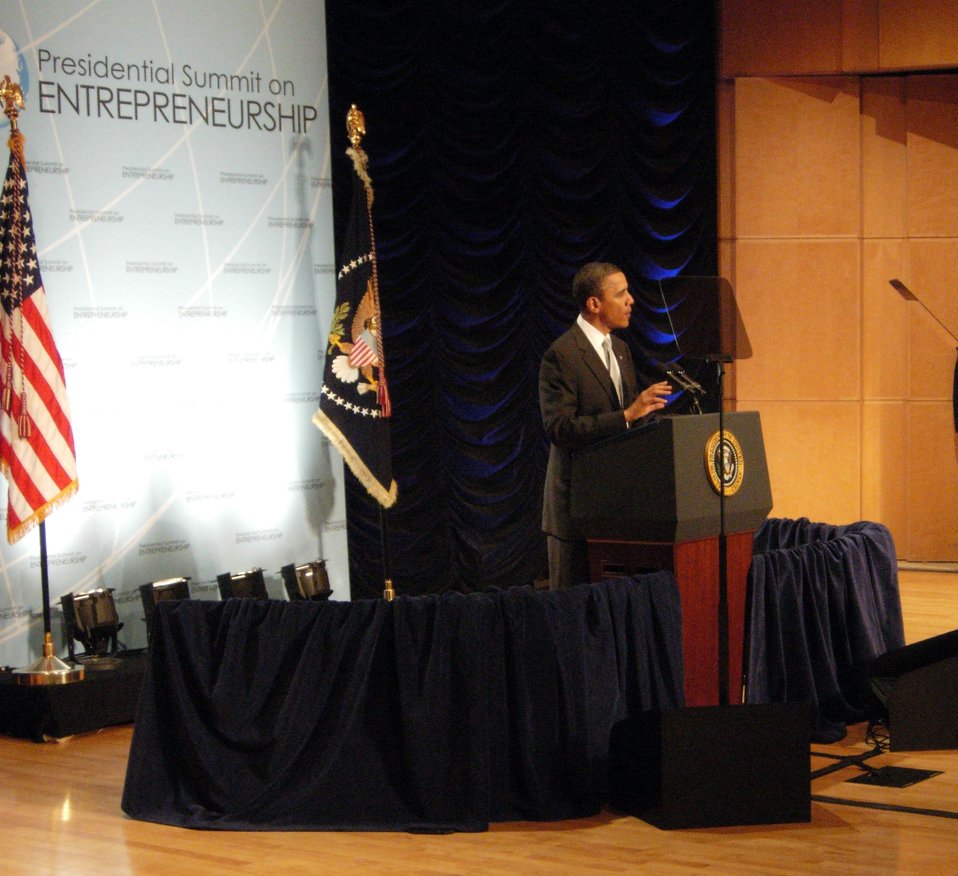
President Obama Delivers Remarks

U.S. President Barack Obama delivers remarks at the 2010 Presidential Summit on Entrepreneurship co-hosted by the U.S. Department of State and the U.S. Department of Commerce, Washington, D.C., April 26, 2010.